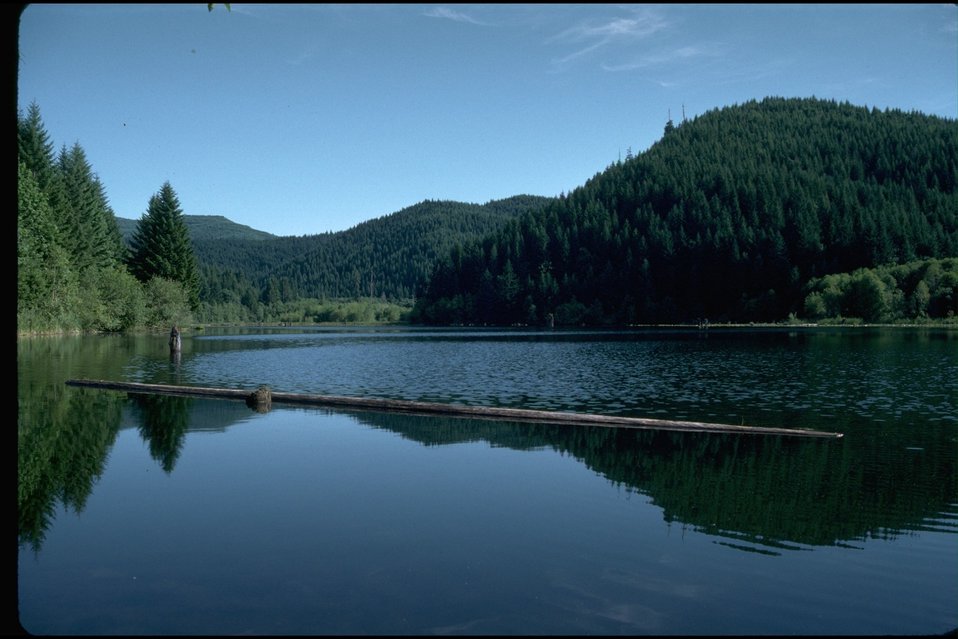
Hult Pond - Hult Reservoir Area.